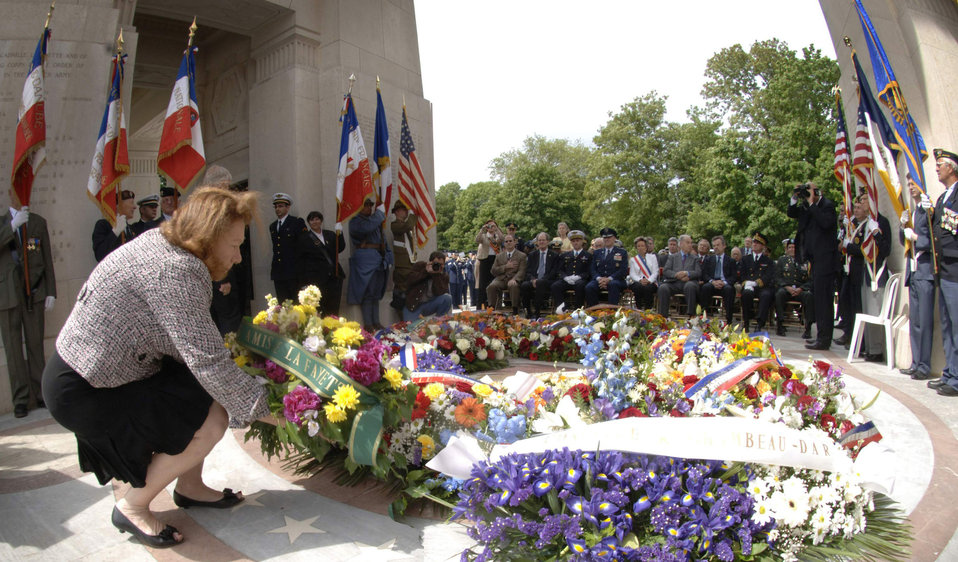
America's first combat aviators memorialized

Mrs. Christiane Barody-Weiss, mayor of Marnes-la-Croquette and Lt. Gen. Gilles Desclaux, commander-in-chief, French Air Defense and Air Operations lead U.S. Air Forces in Europe commander, Gen. Roger A. Brady, Mr. Mark A. Pekala, charge of affairs of the United States of America in France and other distinguished visitors in a tour of the Lafayette Escadrille Memorial's underground crypt of 68 caskets.